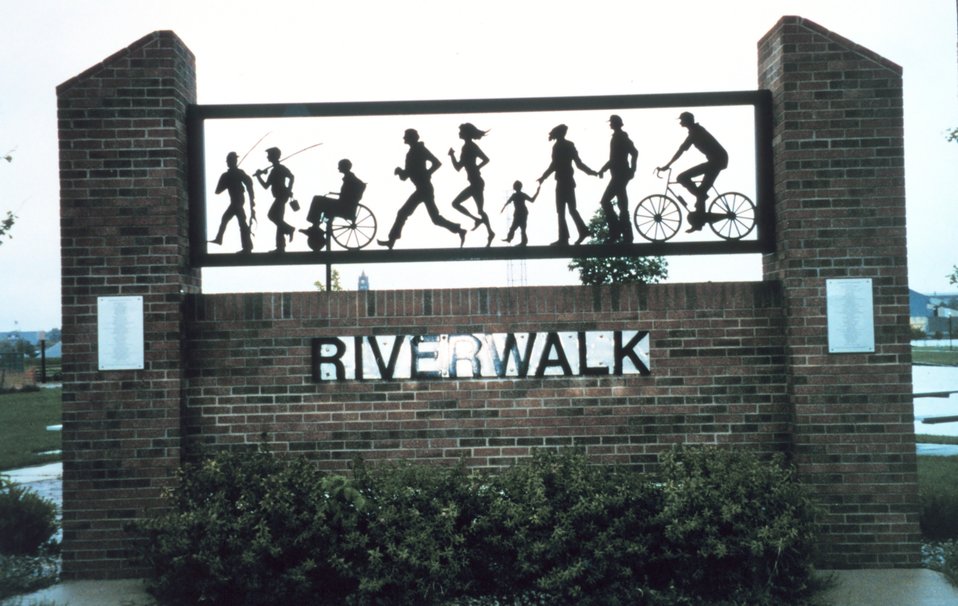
The entrance to River Walk